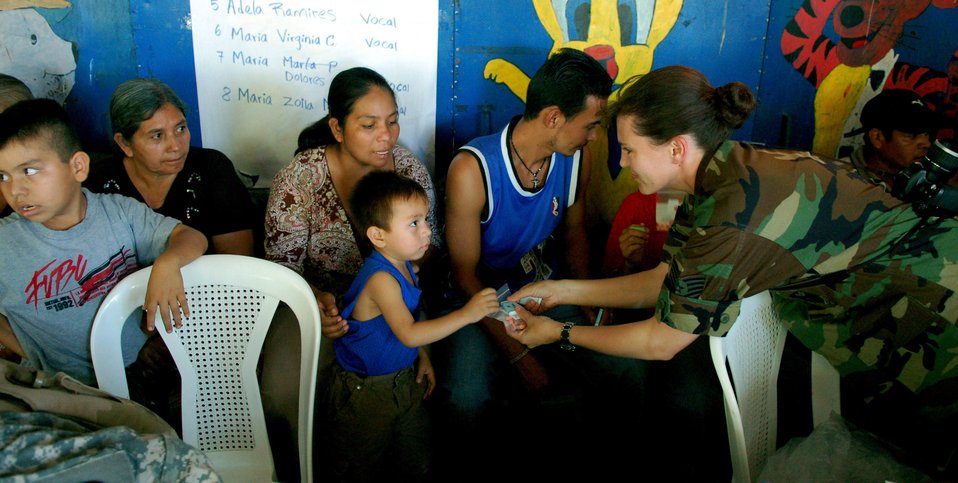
JTF-Bravo participates in El Salvador MEDRETE

Tech. Sgt. Angel Roush hands a bag of vitamins to a young Salvadorian boy Sept. 27 at a makeshift clinic in San Juan Opico, El Salvador, during a medical readiness training exercise. Sergeant Roush is a member of the Joint Task Force-Bravo Medical Element. JTF-Bravo members participated with the Salvadorian militaries in the exercise.